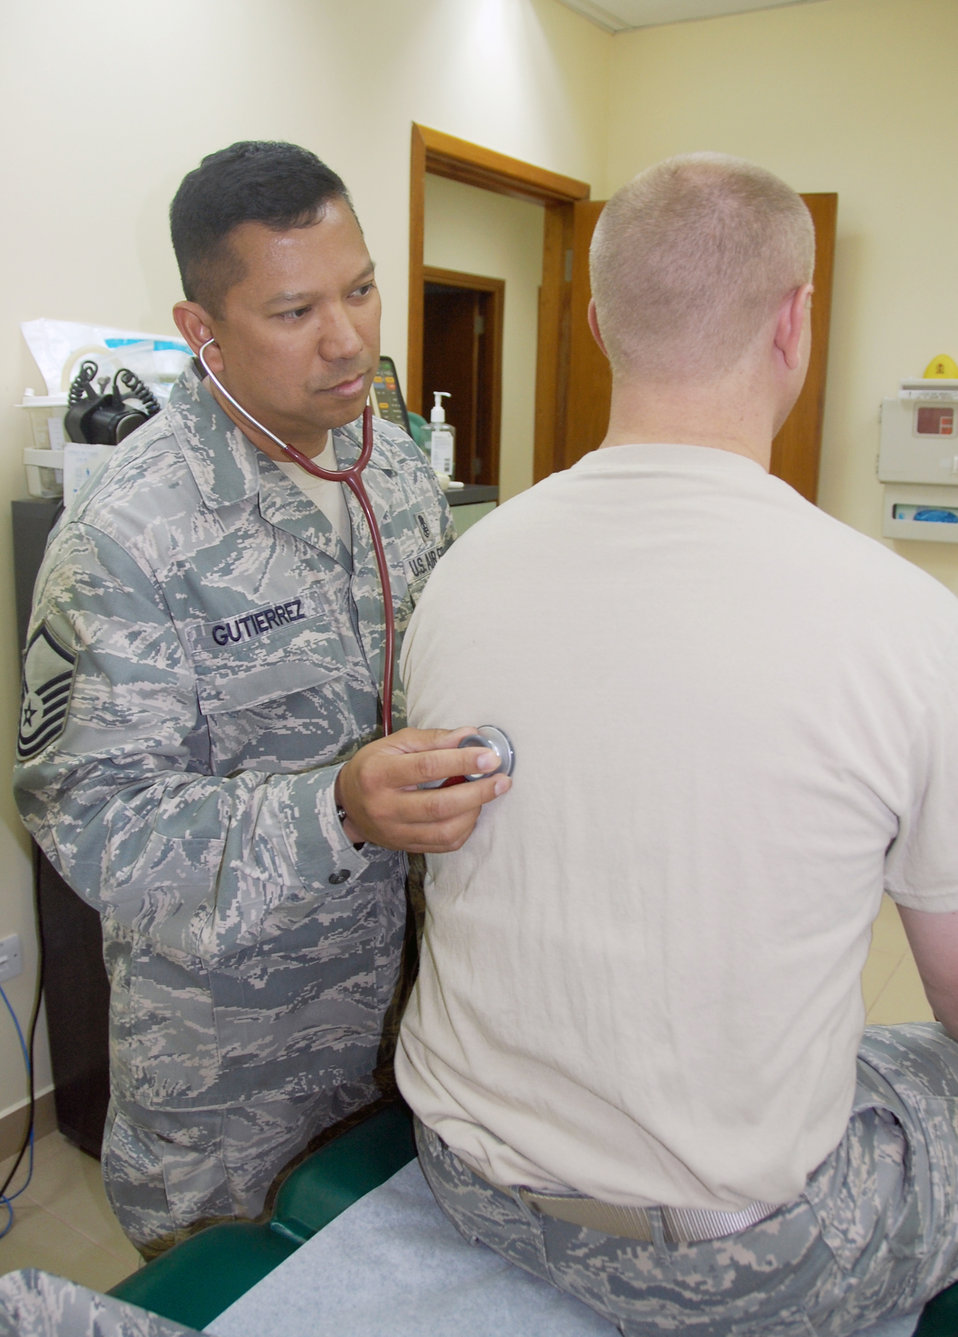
Day in the Life - Master Sgt. Roberto Gutierrez

Master Sgt. Roberto Gutierrez, an independent duty medical technician from the 386th Expeditionary Operations Support Squadron, listens to a patient's lungs May 1 at an air base in Southwest Asia. There are fewer than 500 IDMTs in the Air Force and they are often assigned to flying units or organizations in isolated locations to tend to the unit's medical needs.